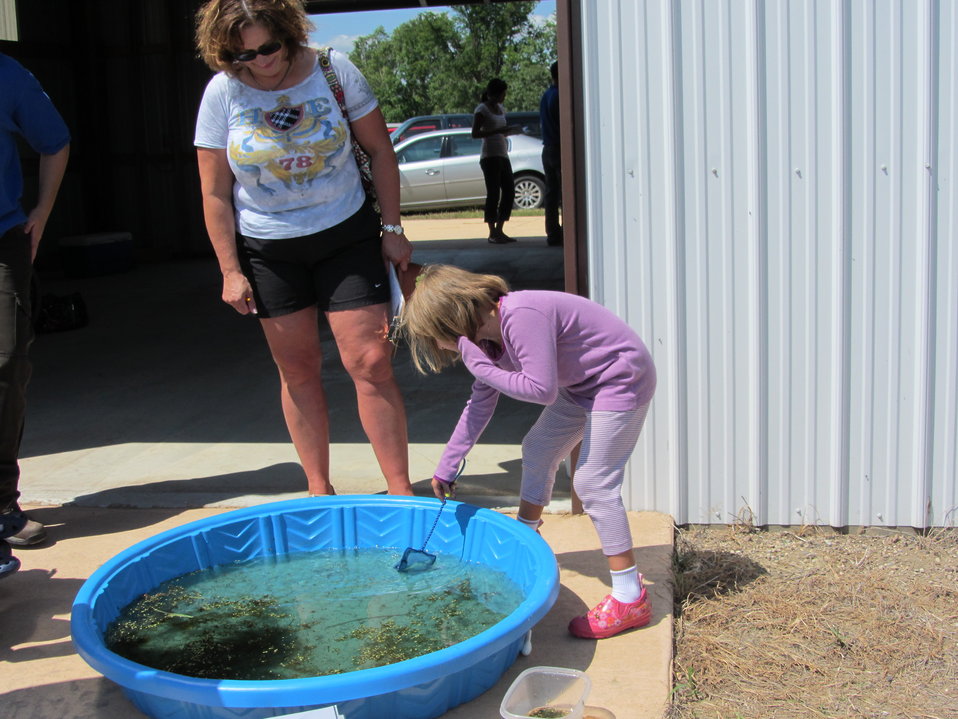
2011 Huron Prairie Fest